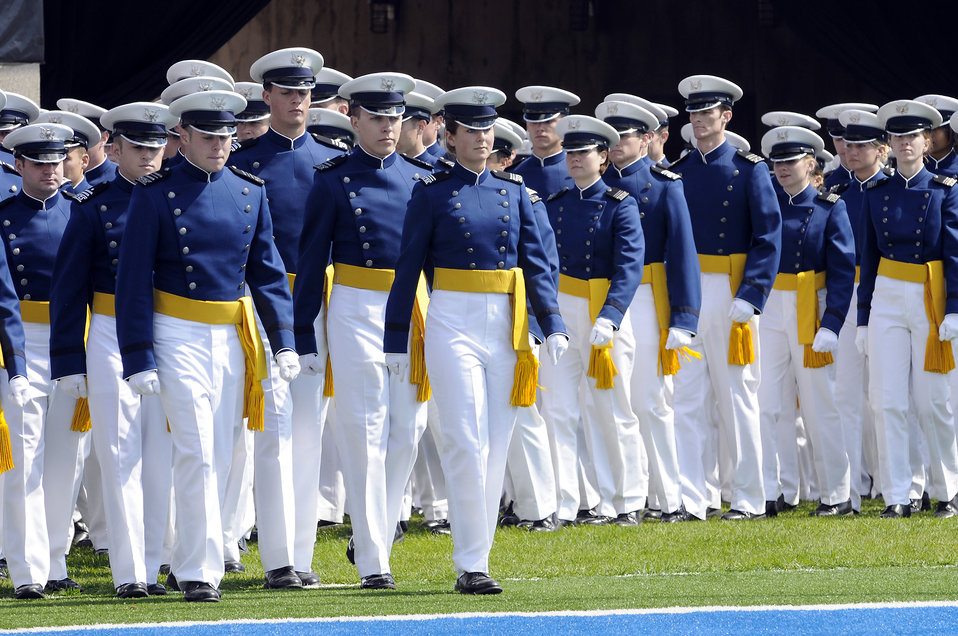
2009 U.S. Air Force Academy graduation

The U.S. Air Force Academy's Class of 2009 enters Falcon Stadium during their graduation ceremony May 27. During the ceremony, 1,046 cadets received their commissions as second lieutenants. Vice President Joe Biden was the commencement speaker.